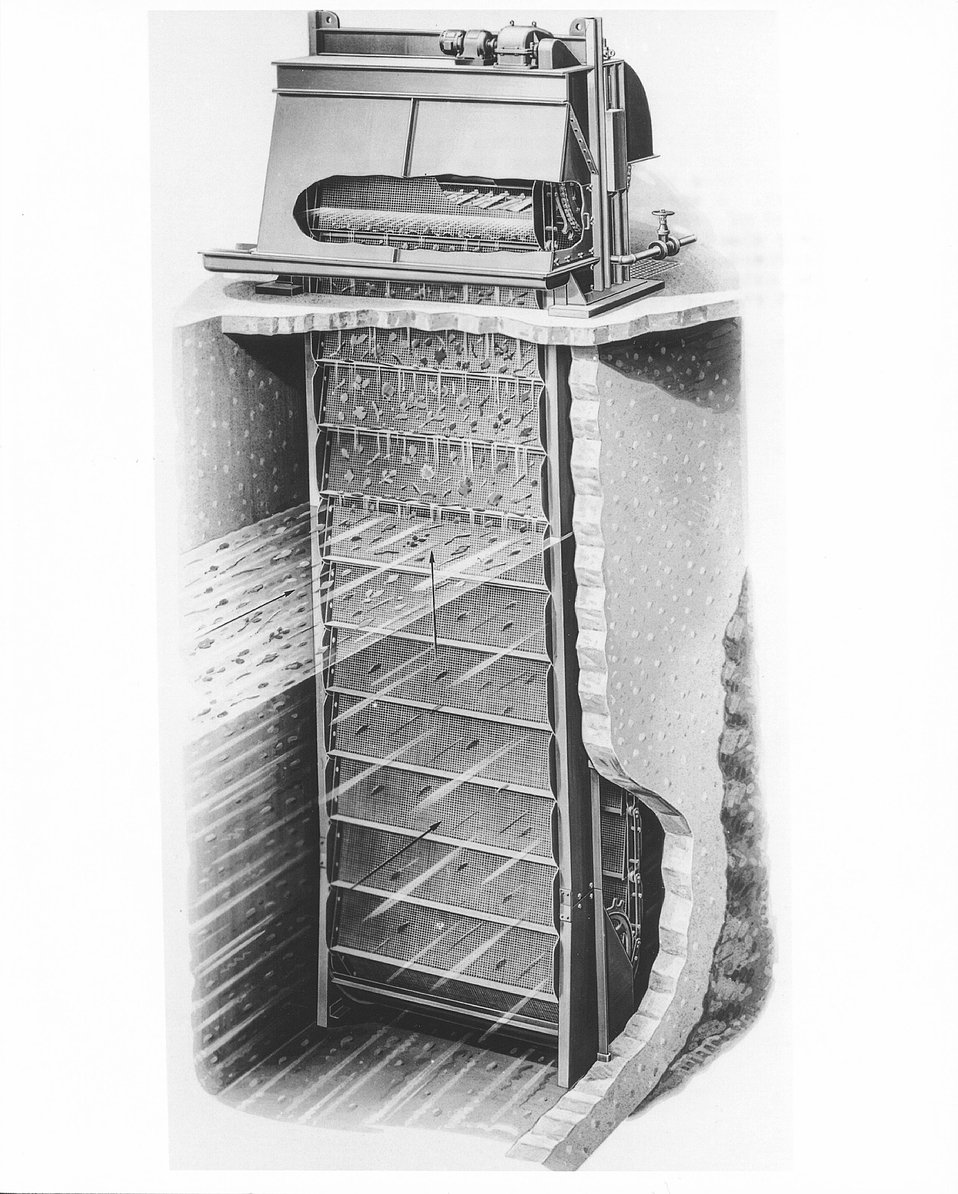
Spray canals which are used in conjunction with a cooling lake at the Dresden Nuclear Power Station Units 2 and 3, located at the point where the Kankakee and Des Plaines Rivers merge to form the Illinois River. Circa 1974.